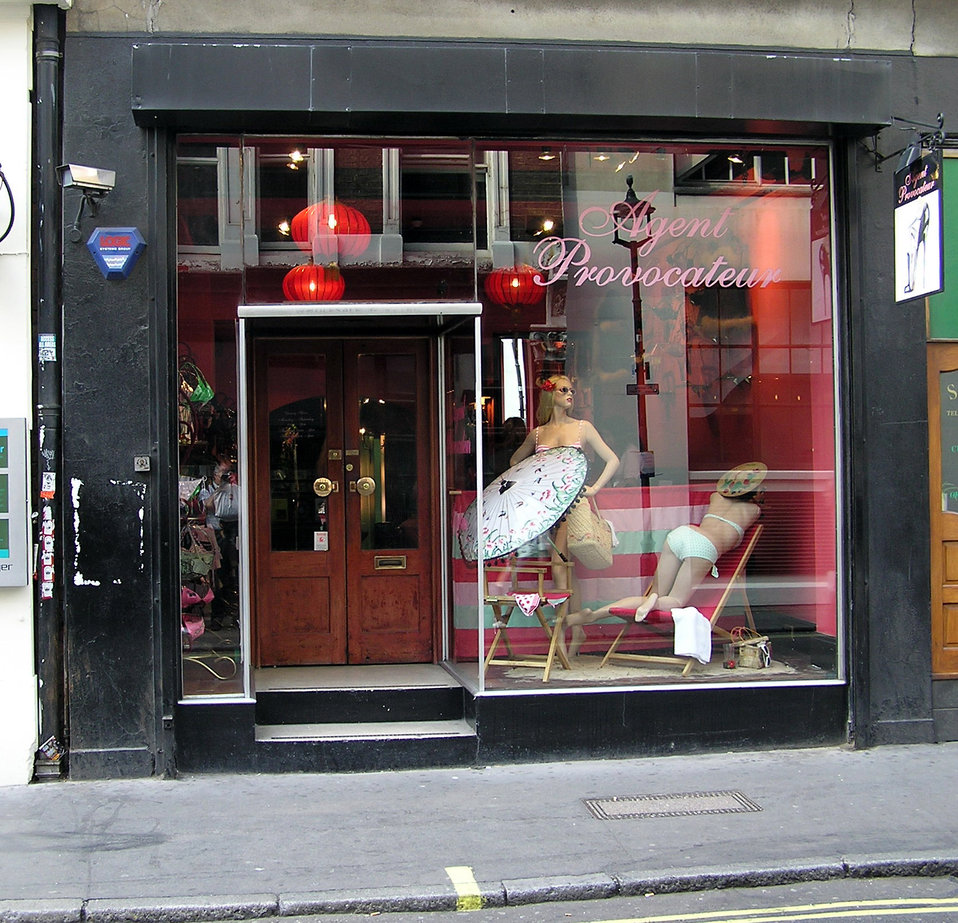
Agent.provocateur.london.arp